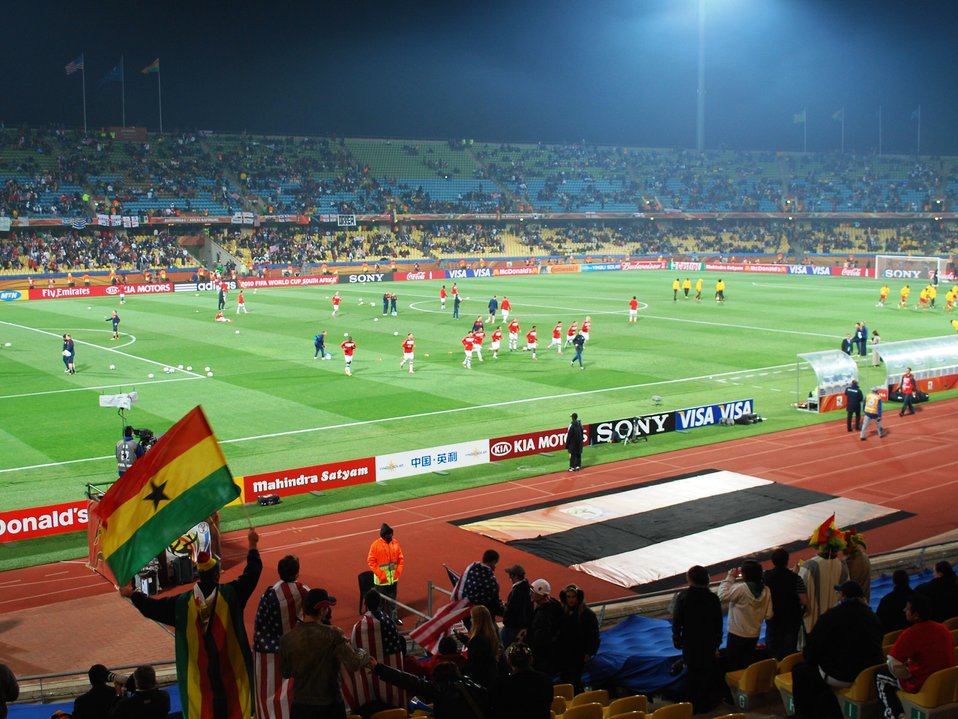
U.S. Plays Ghana in World Cup Match

The United States plays Ghana in a FIFA 2010 World Cup soccer match on June 26, 2010, at the Royal Bafokeng stadium in Rustenburg, South Africa.